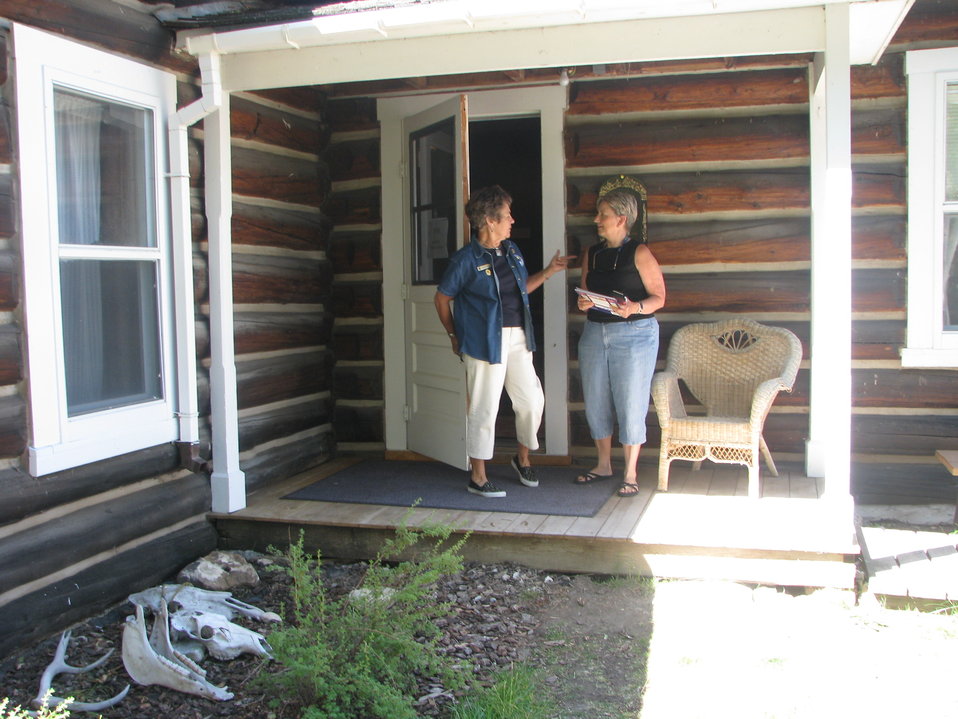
A Visit to the Miller House

National Elk Refuge volunteer, Gaylia Hudgins (left), talks with a visitor on the front porch of the historic Miller House. The homestead site is open to the public from late May through early September and staffed by Refuge volunteers.